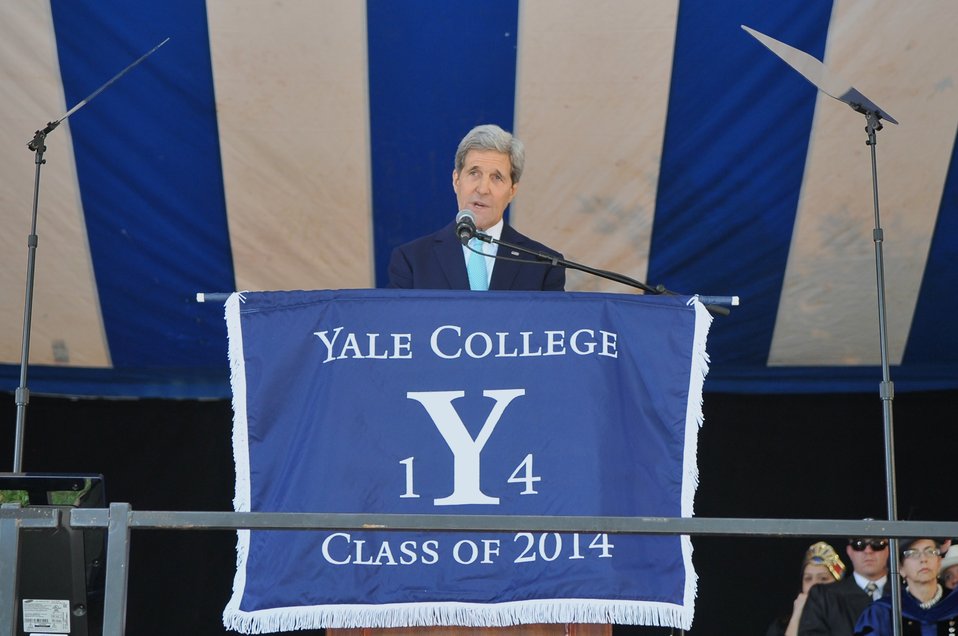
Secretary Kerry Delivers Class Day Remarks at Yale University

U.S. Secretary of State John Kerry addresses Yale University graduates and their families and friends as the 1966 graduate delivers a Class Day speech on the campus in New Haven, Connecticut, on May 18, 2014.